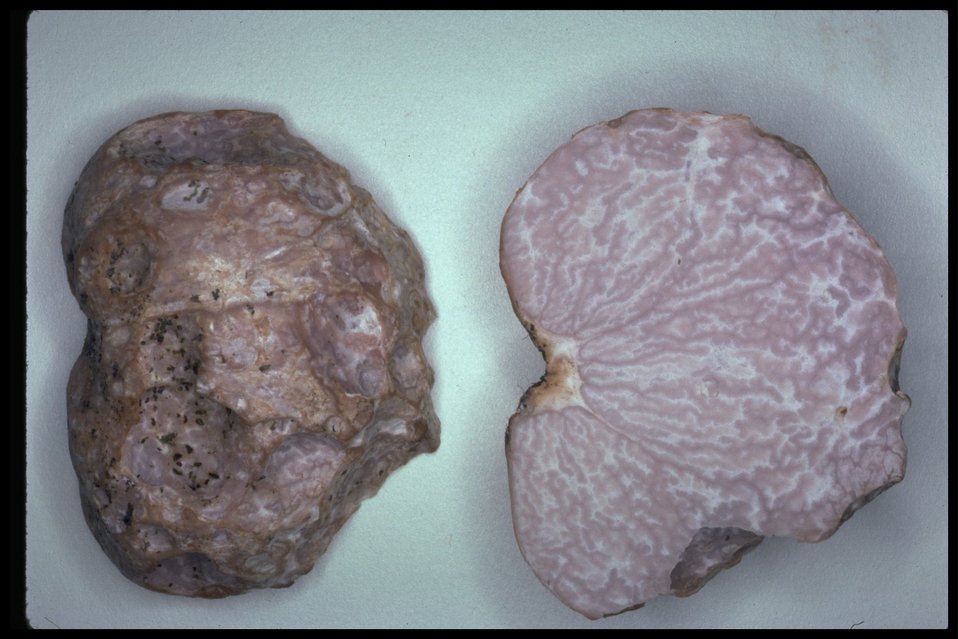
Medium shot of cazia (Cazia flexiascus).